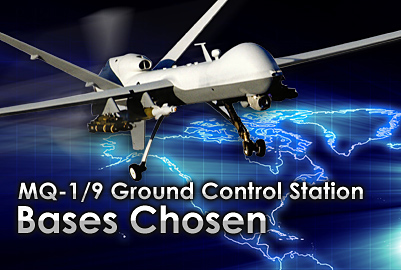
Officials choose bases for MQ-1, MQ-9 ground control stations

Air Force officials chose Whiteman Air Force Base, Mo. and Ellsworth AFB, S.D., as MQ-1 Predator and MQ-9 Reaper ground control stations June 21, 2010.